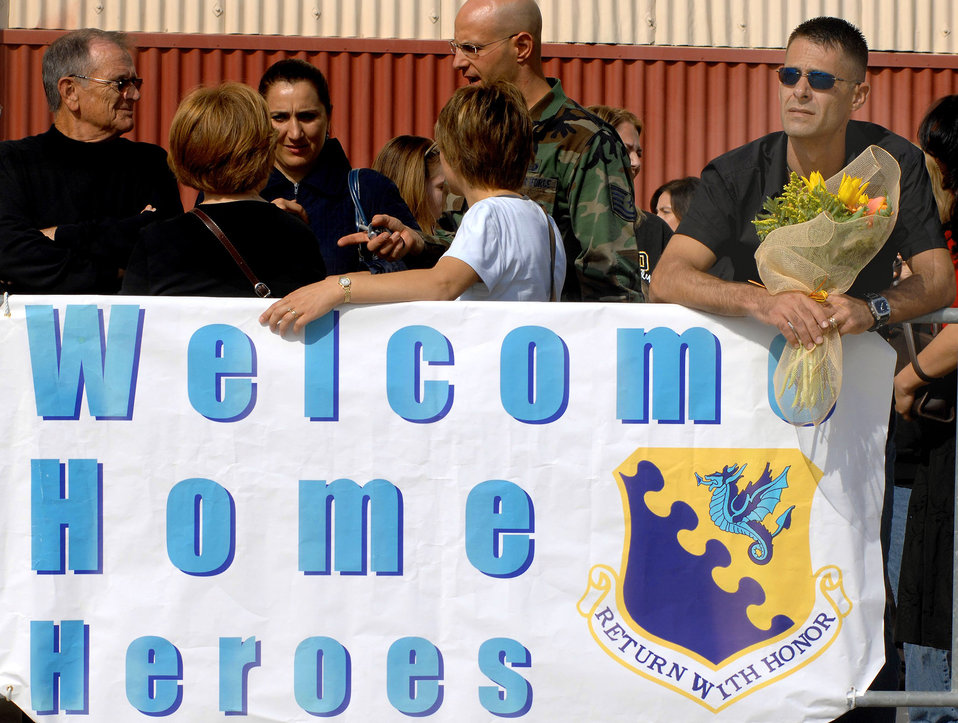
Returning warriors welcomed home

Staff Sgt. Larry Clunk waits patiently with a bouquet of flowers for his wife, Senior Airman Amy Clunk, to debark a plane Oct. 9 at Aviano Air Base, Italy. More than 230 Airmen returned from a four-month deployment to Kunsan Air Base, South Korea. Sergeant Clunk is assigned to the 555th Fighter Squadron.